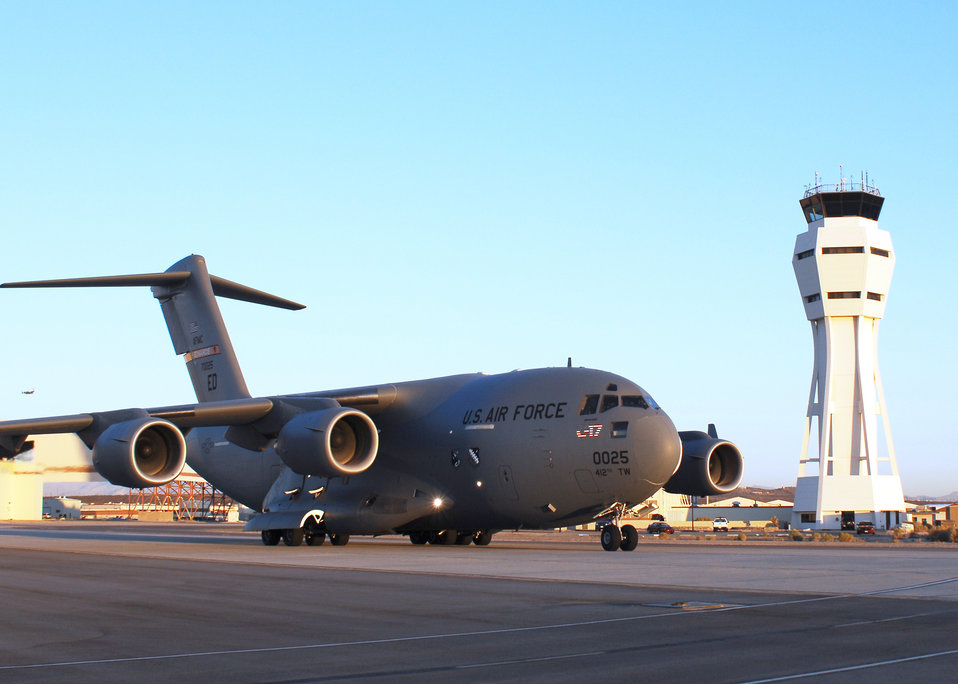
C-17 makes first flight on synthetic fuel blend

A C-17 Globemaster III taxis past the control tower at Edwards Air Force Base, Calif., on Oct. 19, 2007. The early-morning flight marked the first flight of the C-17 using a Fischer-Tropsch synthetic fuel blend in one of its engines. All four engines ran the fuel blend in subsequent tests.